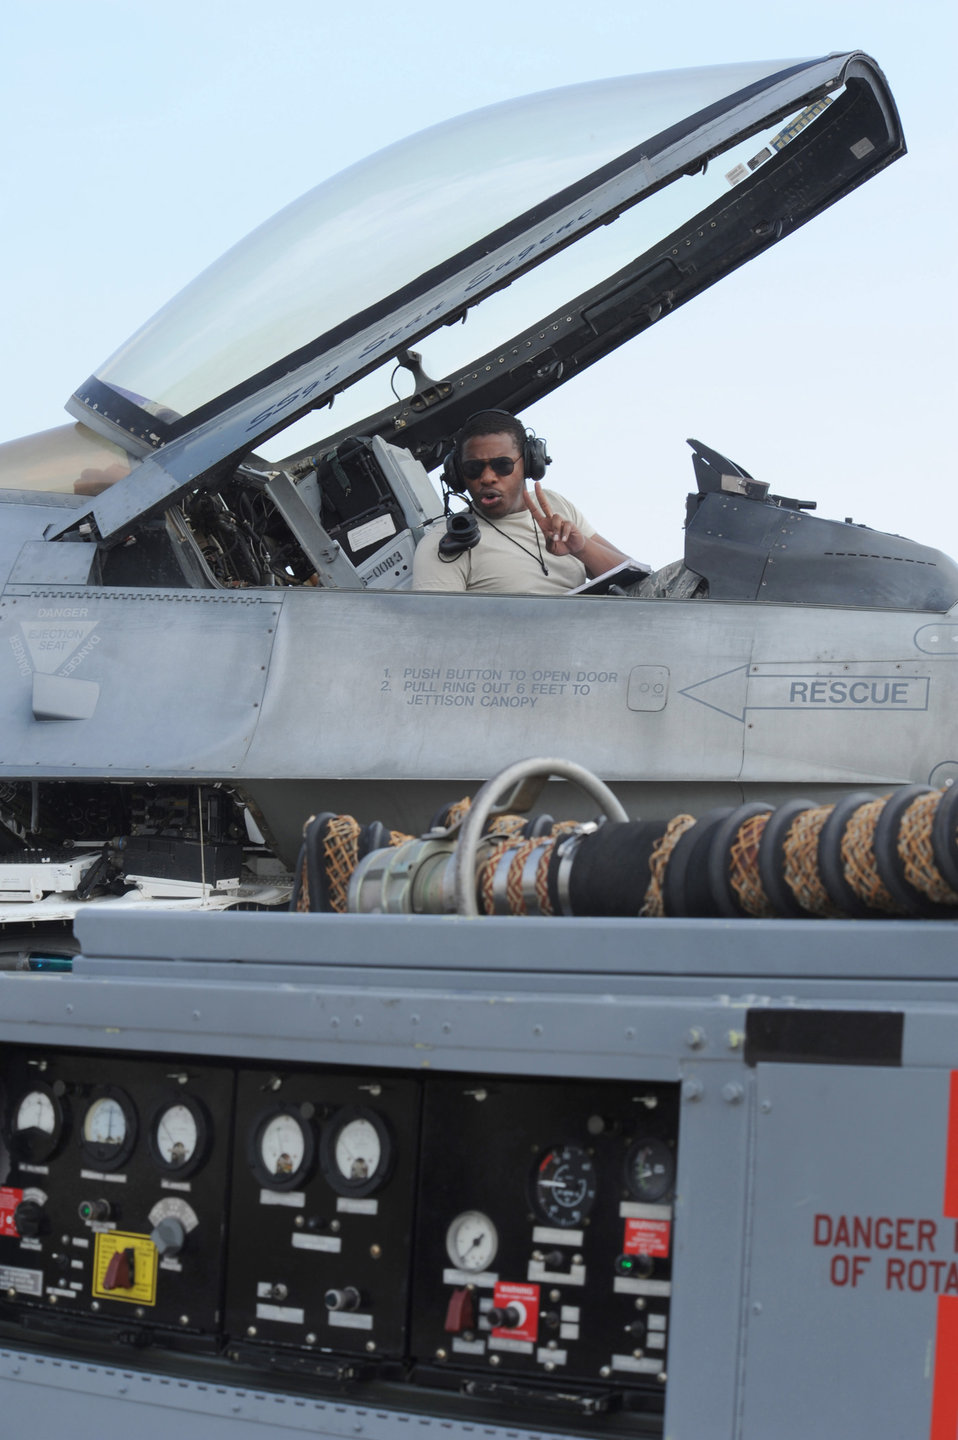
Operation Unified Protector

An Airman assigned to the 52nd Aircraft Maintenance Squadron checks the power supply of an F-16 Fighting Falcon on March 31, 2011, at Aviano Air Base, Italy. The 52nd Aircraft Maintenance Squadron is deployed from Spangdahlem Air Base, Germany in support of Odyssey Dawn.